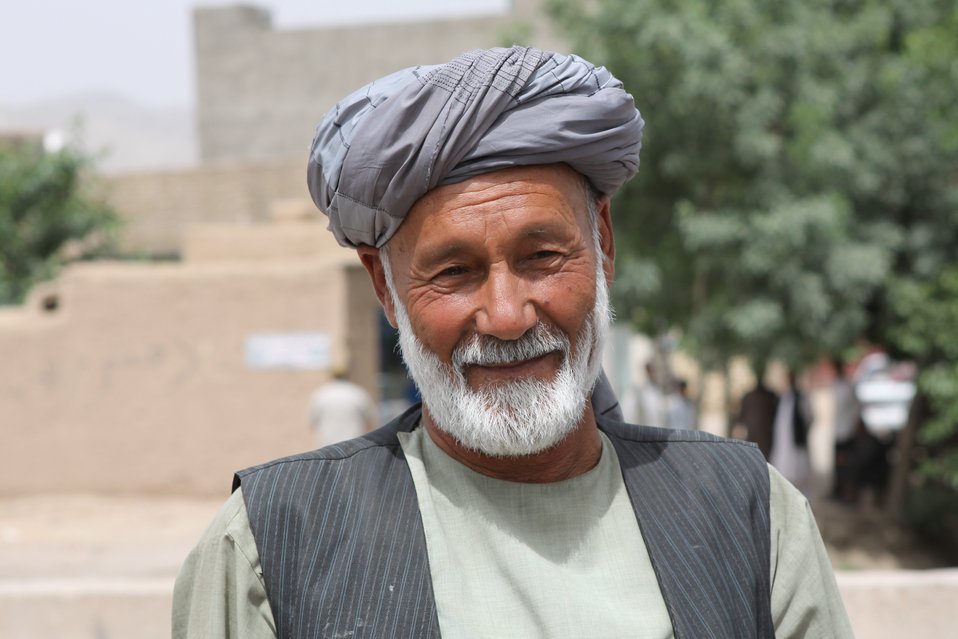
100525 Hirat Marble Conference 622